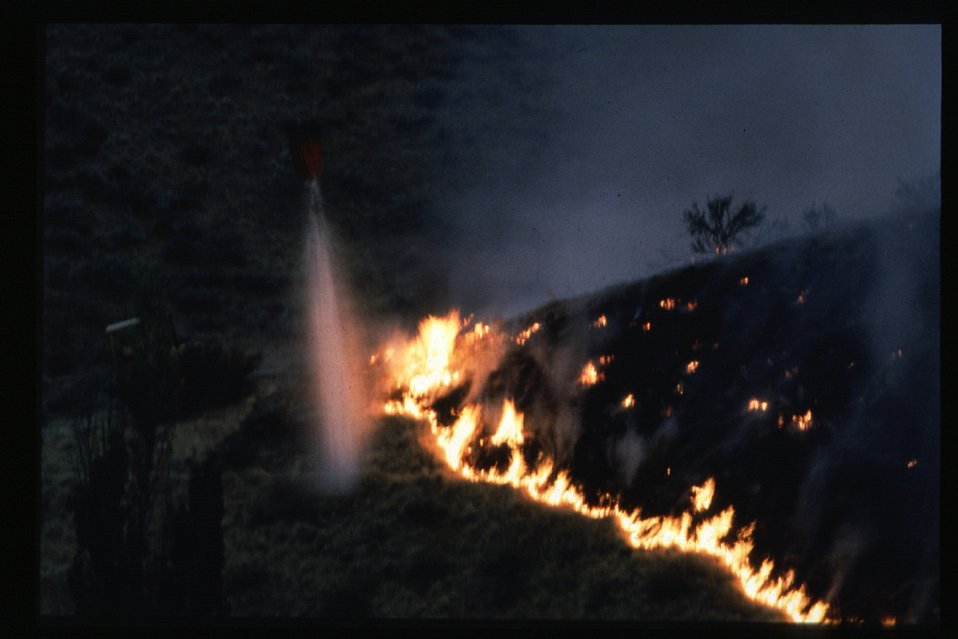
8th Street Fire Boise Front Foothills Four Rivers Field Office LSRD Lower Snake River District